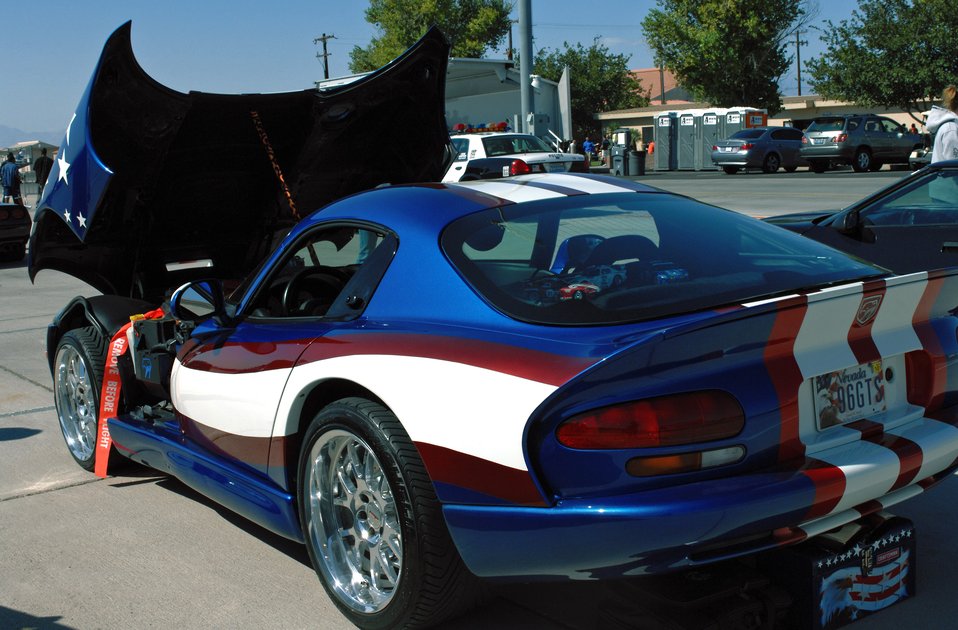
Airmen test their limits at autocross

Individuals showcase their cars at the Nellis Autocross Sept. 29 at Nellis Air Force Base, Nev. The autocross is a two-day event that includes a fighter vs car race, a mile shoot out, and a car show. Airmen from Nellis and Creech Air Force bases participated during the events.